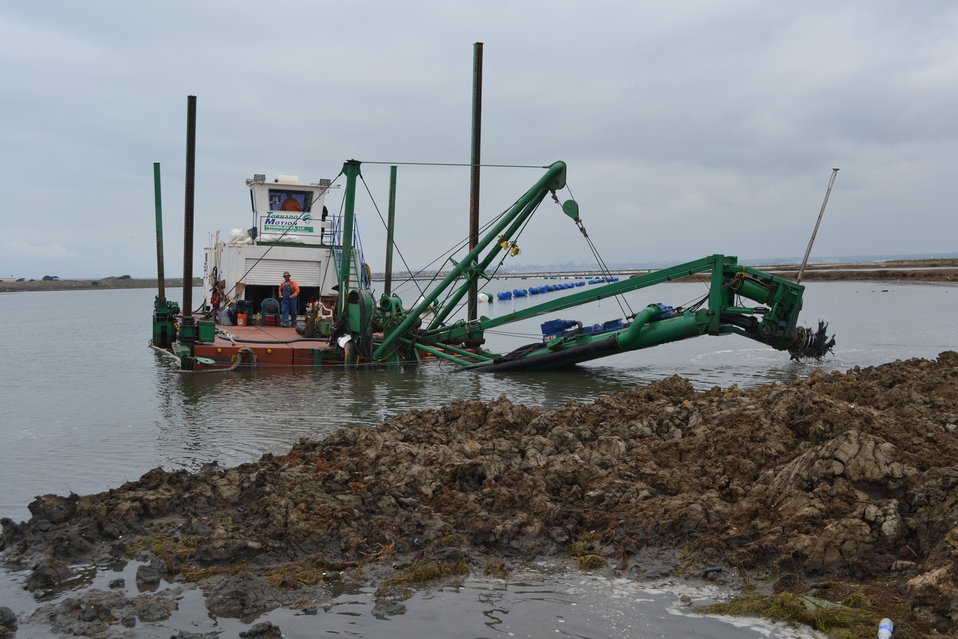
Trash clogging the dredge cutter head during the restoration project

Unfortunately at times, the trash trapped in these western salt ponds would clog up the rotating dredge head and the contractors from Bert W. Salas would have to stop working to remove it. (Lisa Cox/USFWS)
www.fws.gov/sandiegorefuges/Western Salt Ponds Rest...